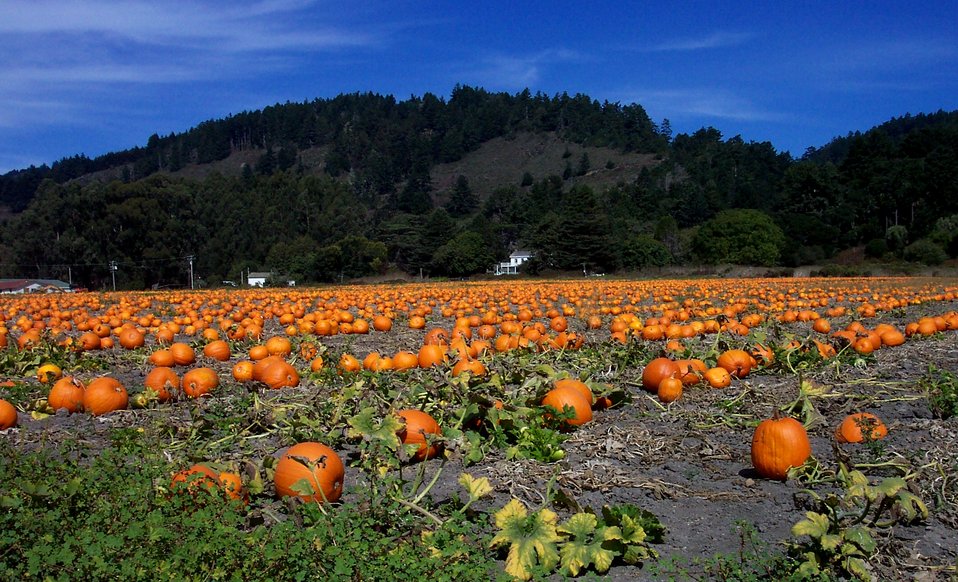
A pumpkin patch along Highway 1 north of Davenport.